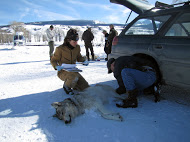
Gray wolf

Scientific name: Canis lupus
Status: Endangered, Non-essential and Delisted populations
Photo credit: Eric Cole USFWS
Biologists record data and monitor a wolf during its immobilization.